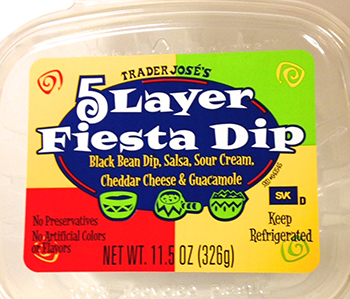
RECALLED – Hummus and dip products

May 19, 2014 – Product Recall – Lansal, Inc. Voluntarily Recalls Hummus & Dip Products Due to Possible Health Risk.